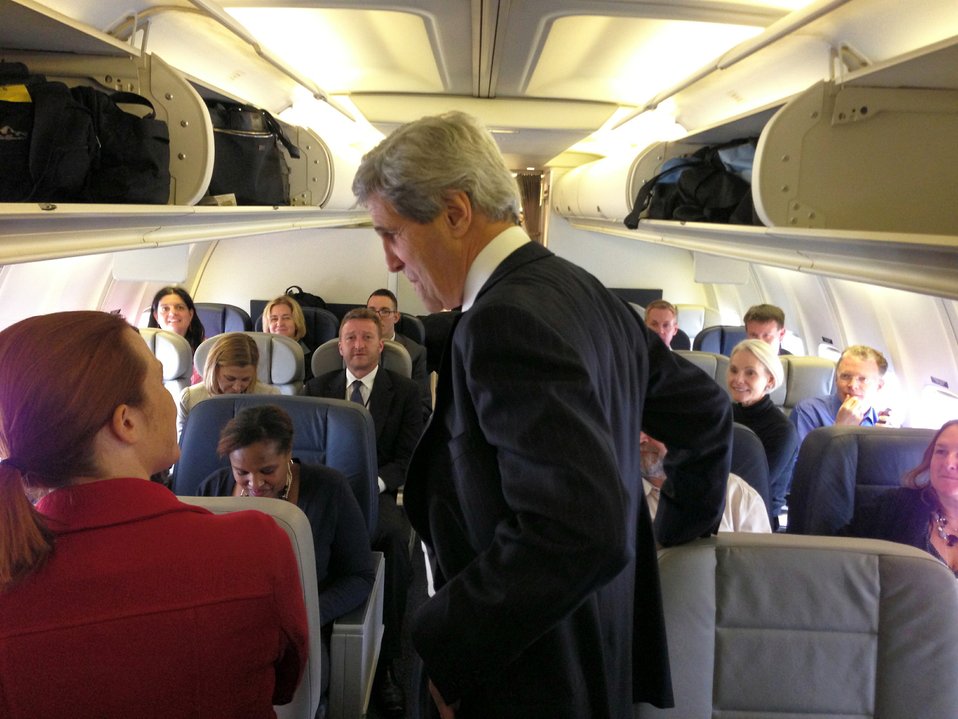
Secretary Kerry Greets His Traveling Press Corps

U.S. Secretary of State John Kerry greets his traveling press corps before departing Andrews Air Force Base for Russia on May 6, 2013.